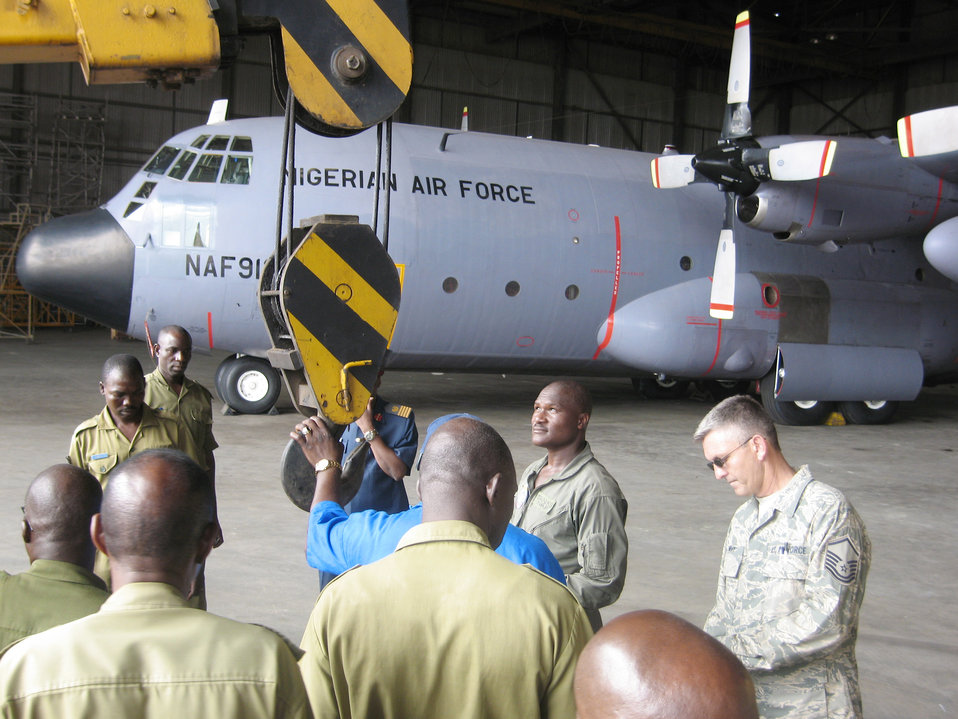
U.S. Air Forces Africa help Nigerian C-130 fly again

Master Sgt. Christopher May helps restore one of Nigeria's C-130 transport aircraft to flying condition as part of an ongoing military-to-military engagement between 17th Air Force (U.S. Air Forces Africa) and the West African nation. Sergeant May is from the Tennessee Air National Guard.